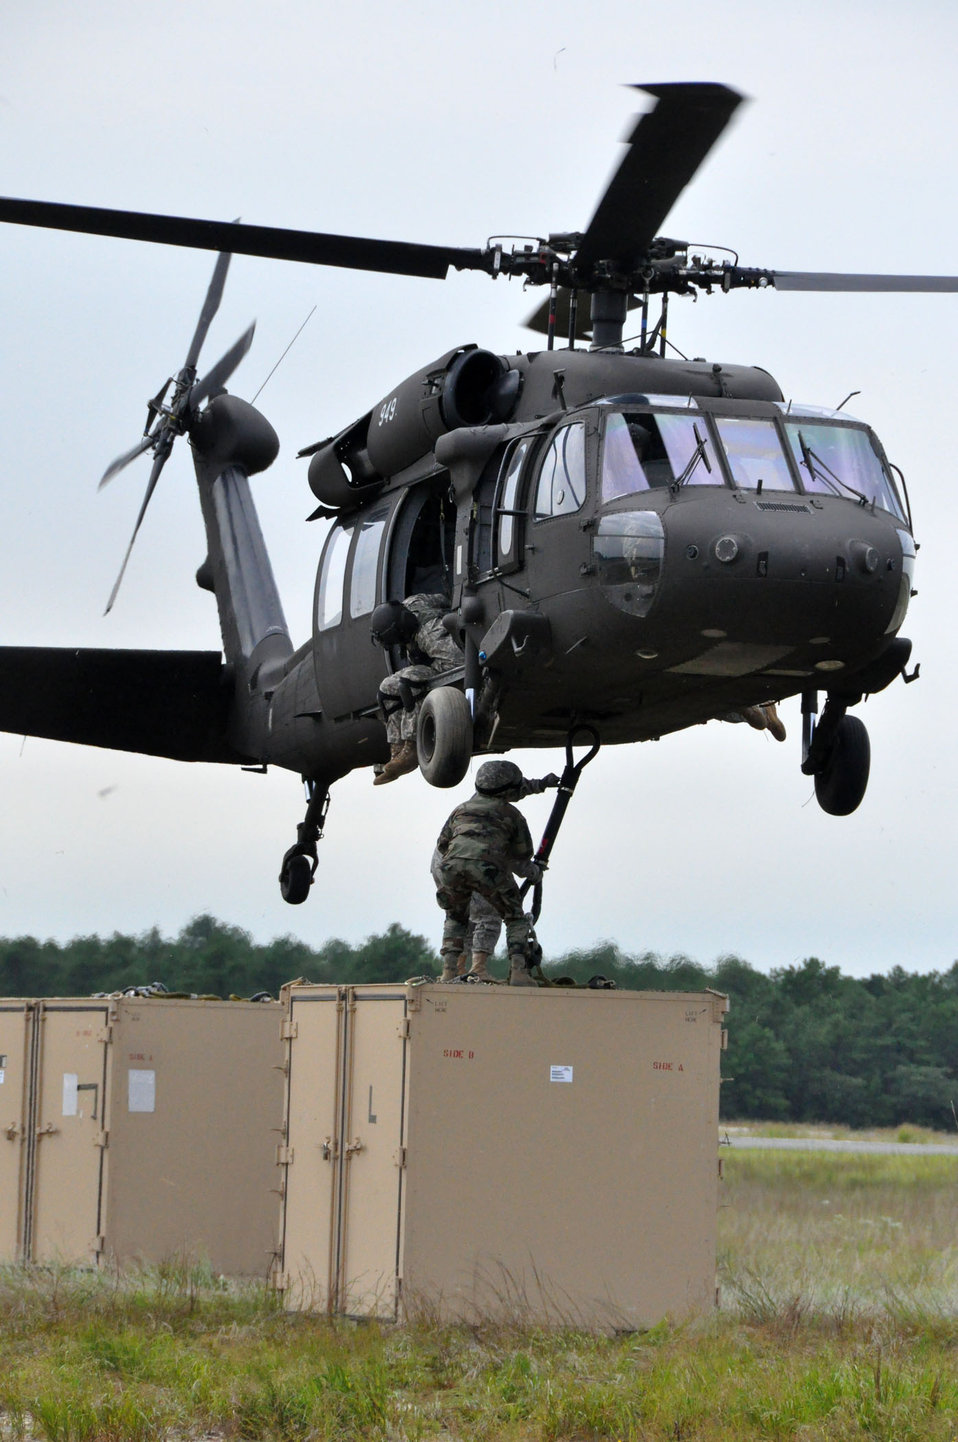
JTF-PO

Airmen with the 621st Contingency Response Group from McGuire Air Force Base, N.J., hook a cargo container to the bottom of an Army HH-60 Pave Hawk helicopter at Lakehurst Naval Air Station. The Airmen and Soldiers are taking part in Eagle Flag 09, and are part of United States Transportation Command's Joint Task Force-Port Opening, a joint team designed to open and operate deployed aerial ports and forward supply nodes.